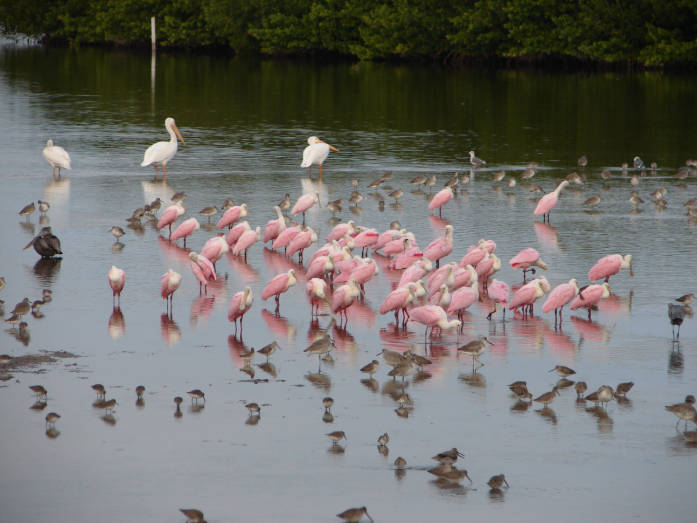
Ding Darling National Wildlife Refuge, FL

Roseate spoonbills and white pelicans